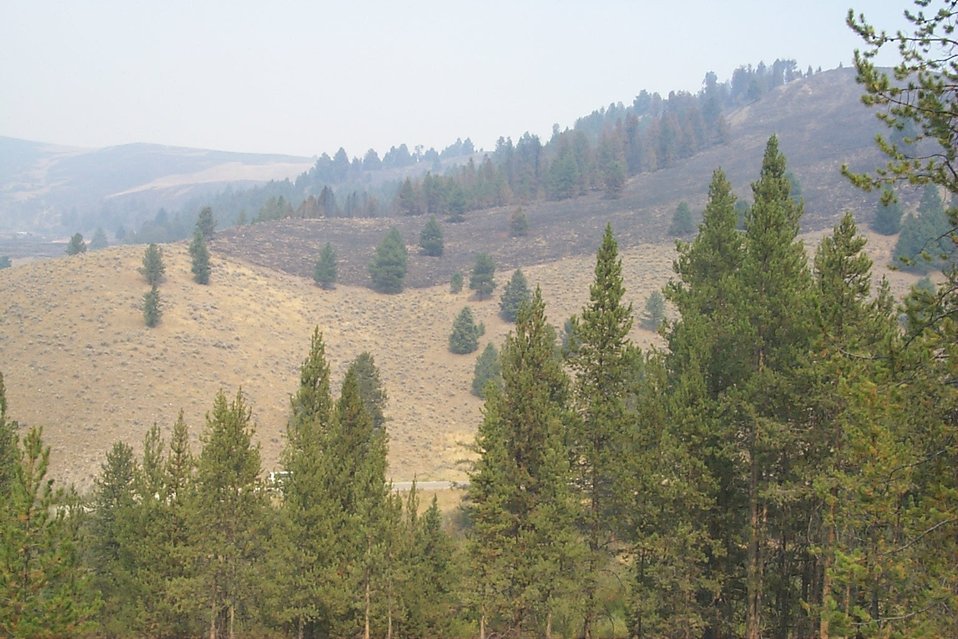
Burn area Fire Clearwater Fire Salmon Field Office USRD Upper Snake River District